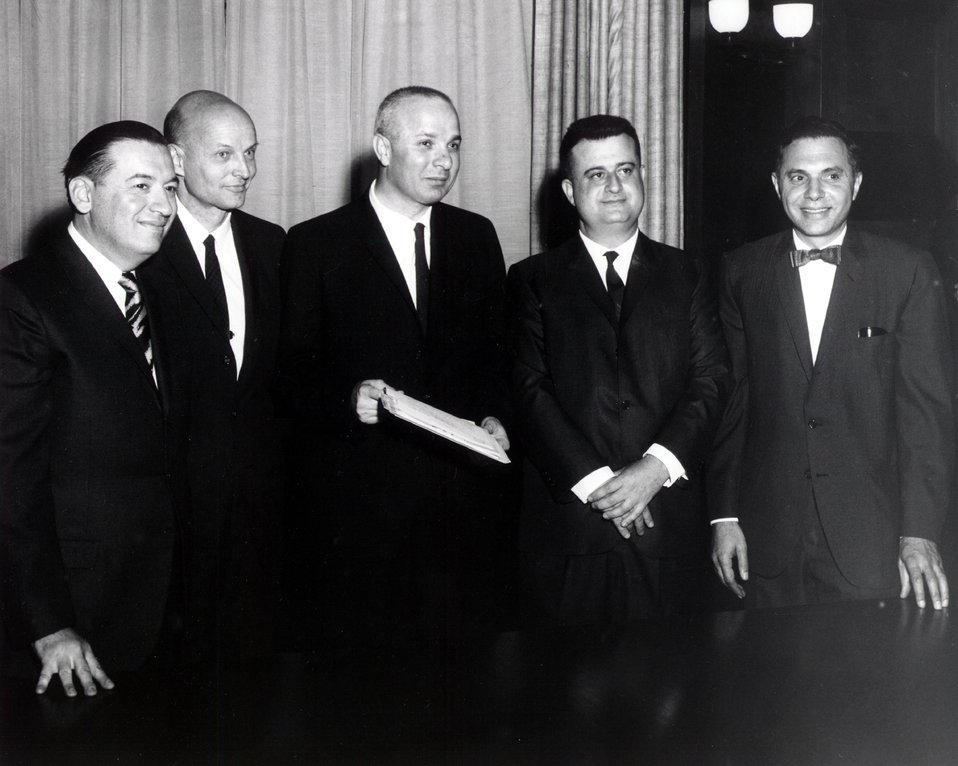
Lawrence Award, 1966.